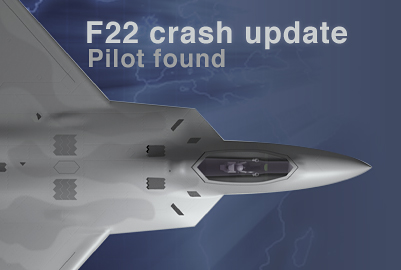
U.S. Air Force